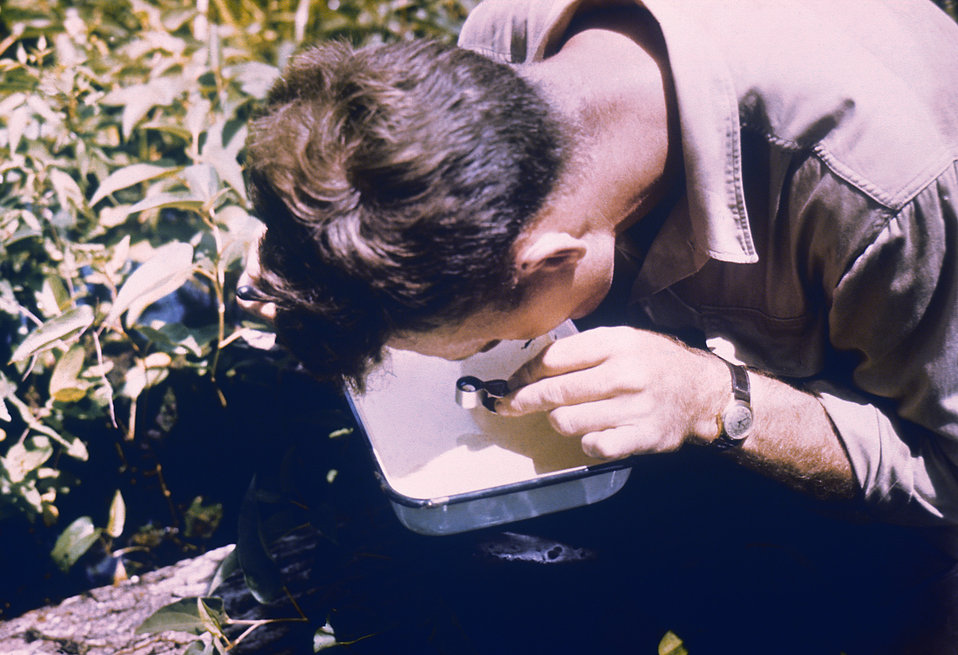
A field worker conducts a mosquito larvae examination study.